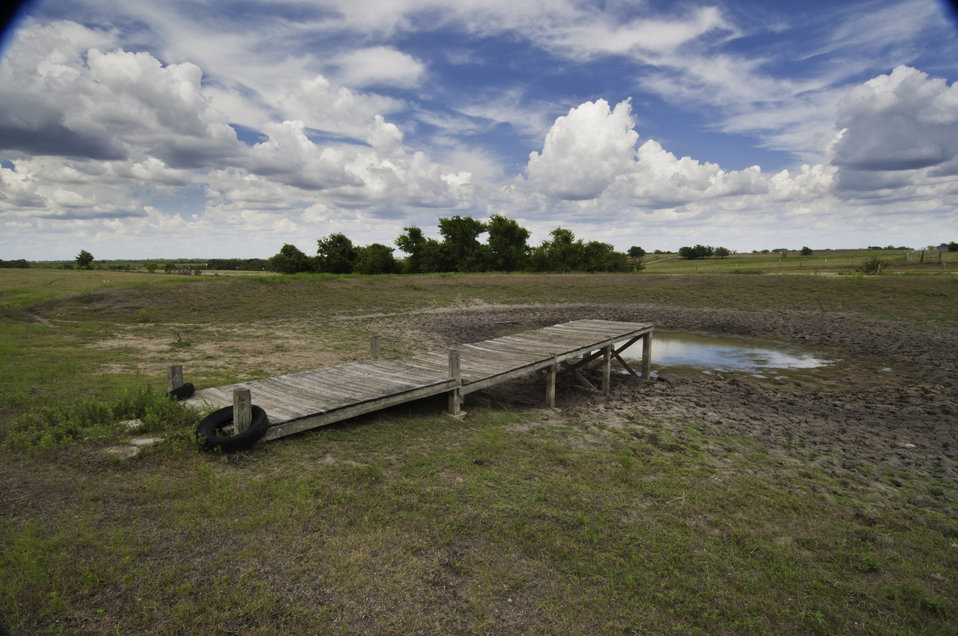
Dry livestock tanks show the effect of drought in Schulenberg, TX on Aug. 23, 2013.